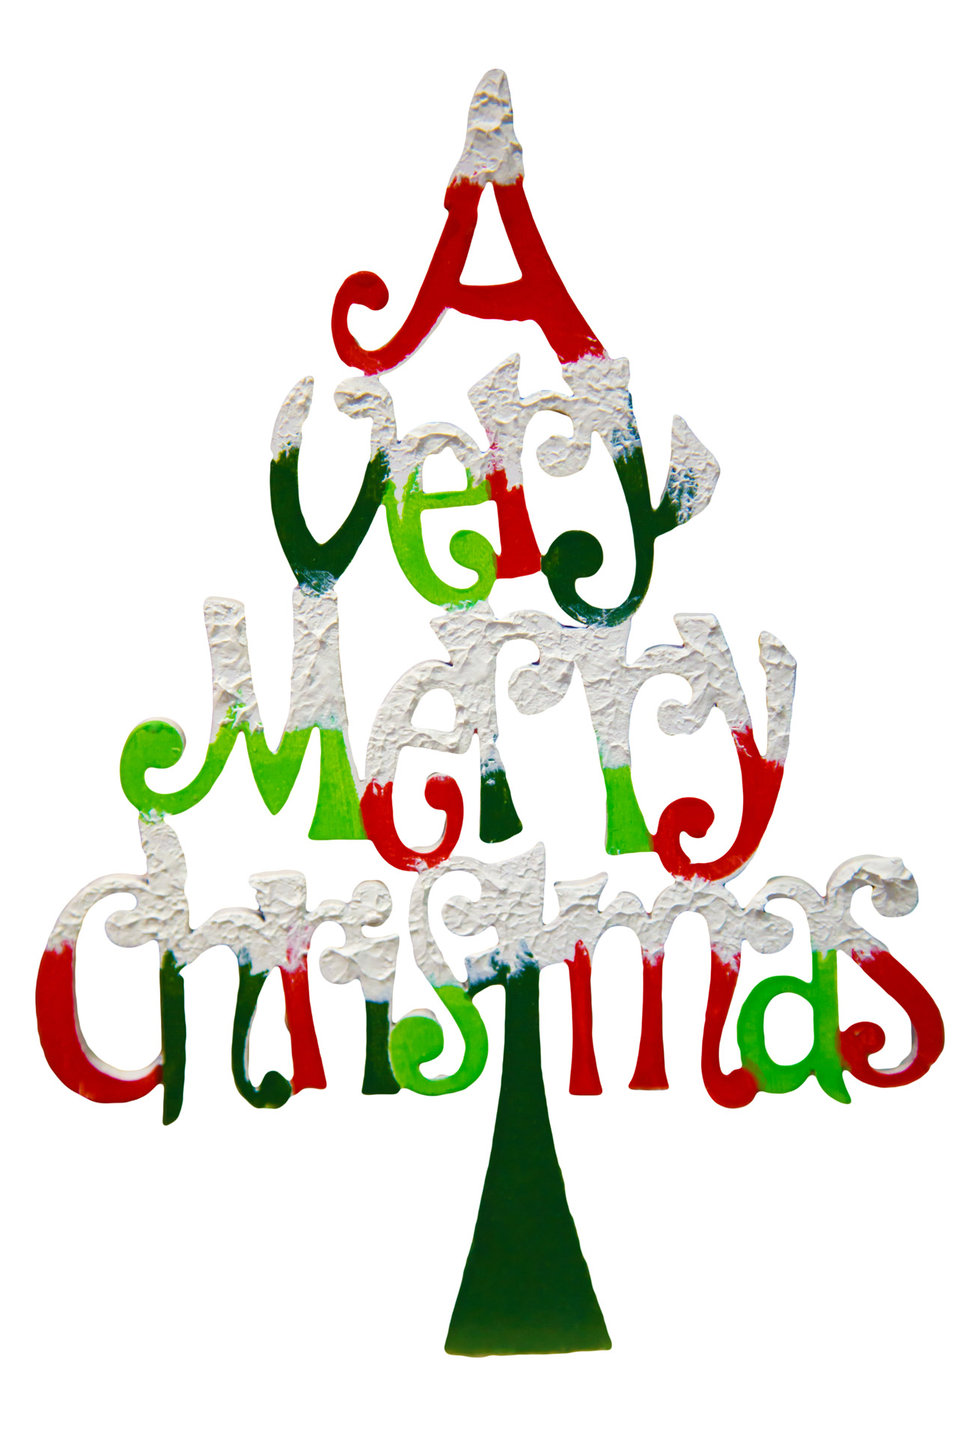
Merry christmas isolated

A very merry christmas text isolated on white background.